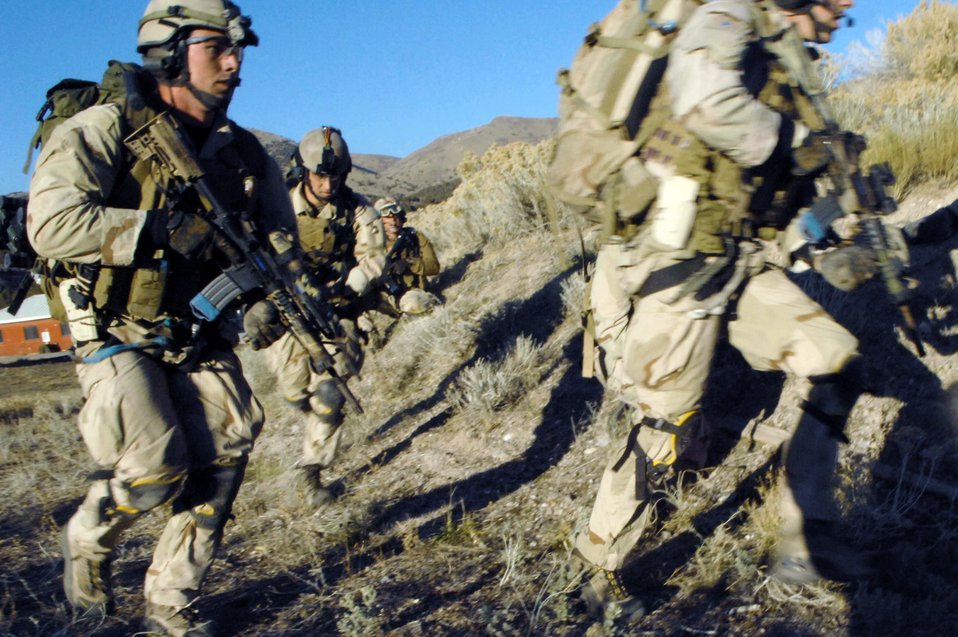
Combat search and rescue training in Utah

Pararescuemen make an urban village assault during an extraction of a simulated downed pilot during a combat search and rescue integration exercise Nov. 8 at Camp Williams, Utah. The pararescuemen are from the 58th Rescue Squadron, Nellis Air Force Base, Nev. Members of the 34th Weapons Squadron from Nellis AFB led the search and recovery training. The exercise expanded the integration with Utah's 211th Aviation Group AH-64 Apache Joint Rotary Wing, 4th Fighter Squadron F-16 Fighting Falcon assets from Hill AFB, Utah, and special operations forces. Exercise participants also conducted extensive joint combat search and rescue operations against surface-to-air threats. The exercise is being run held Nov. 6 through 15.